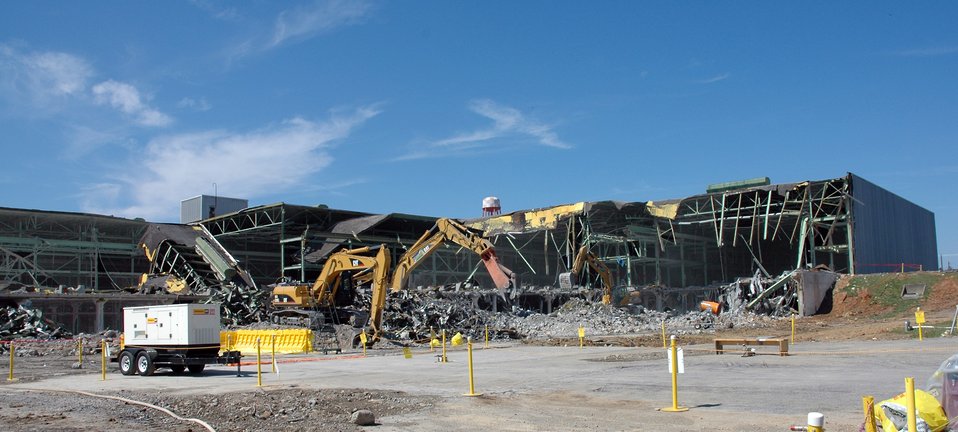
K-29 demo 3-15-06 (1)